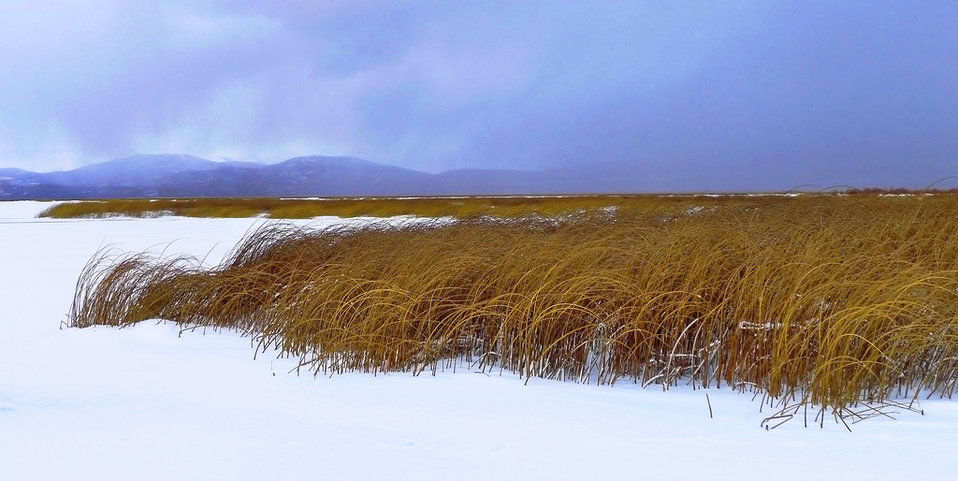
snow approaches grasslands

Red Rock Lakes National Wildlife Refuge, MT